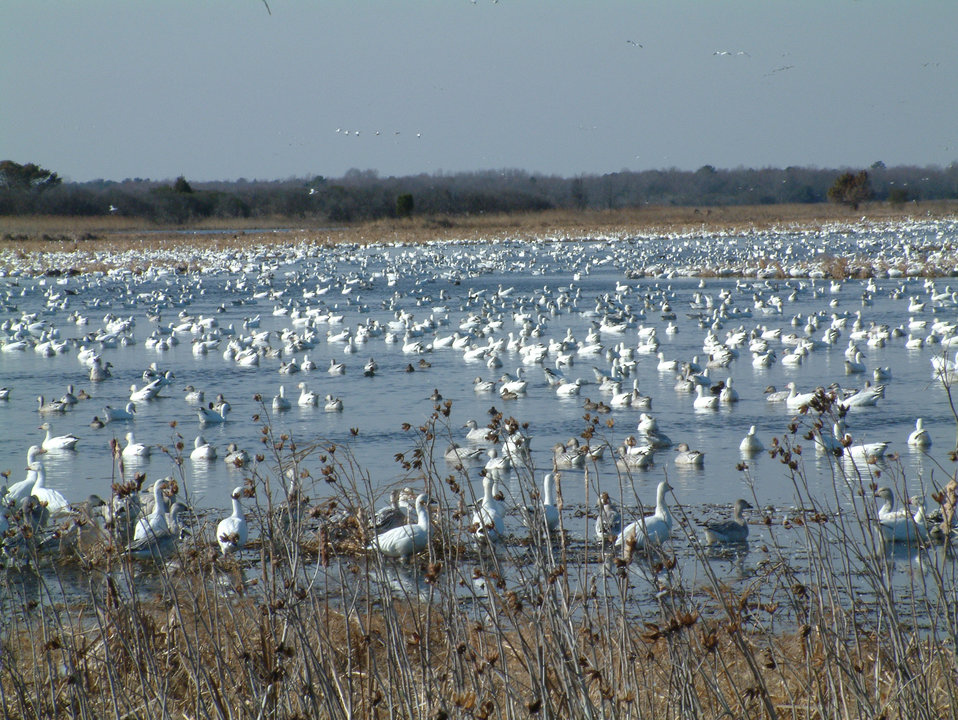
Prime Hook waterfowl in Refuge Marshes

Waterfowl fill a marsh at Prime Hook National Wildlife Refuge in Delaware.